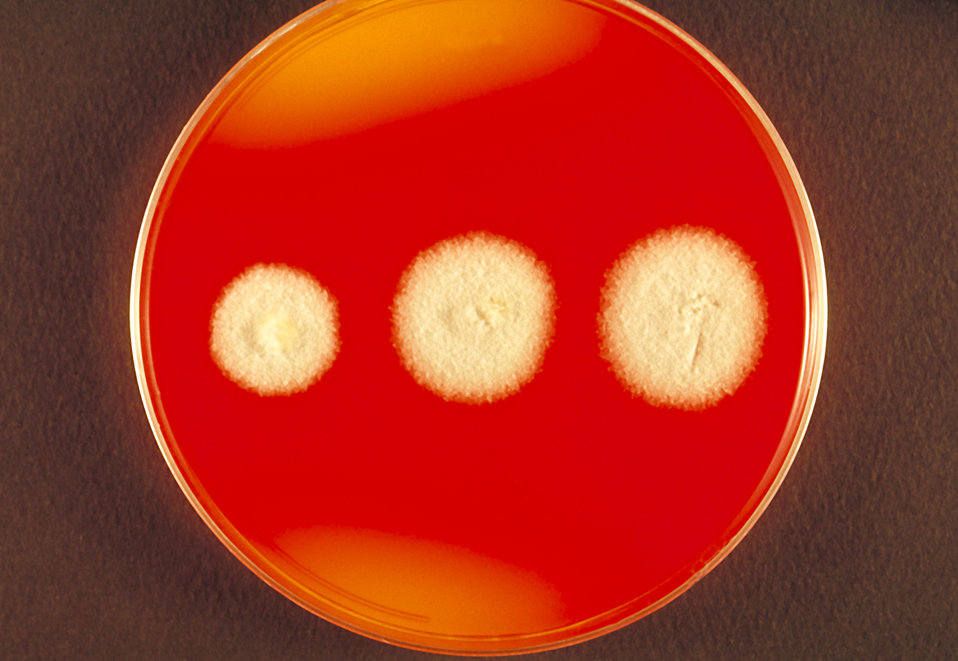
This image shows a DTM agar plate culture with colonies of a Trichophyton sp. fungal organism.